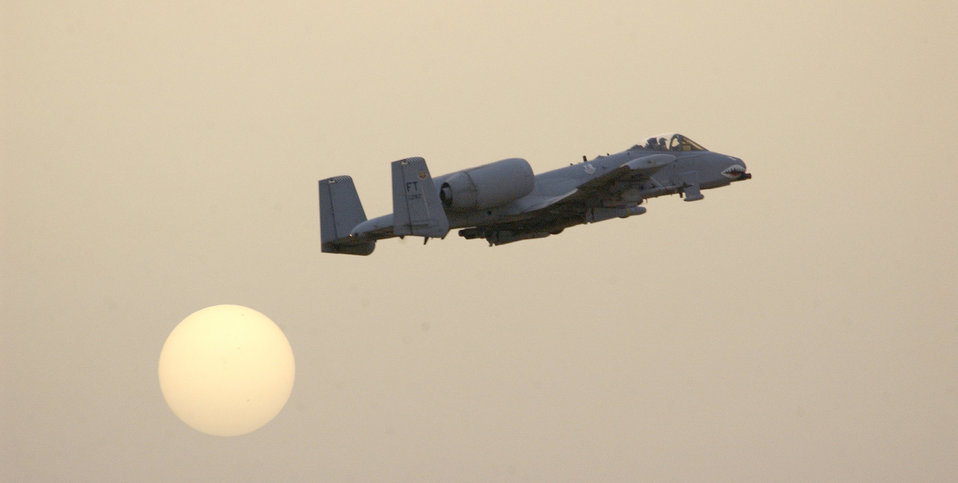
Thunder over the sun

OPERATION IRAQI FREEDOM -- An A-10 Thunderbolt II from the 332nd Air Expeditionary Wing takes off for a mission into Iraq, March 29, 2003, from a forward-deployed location in support of Operation Iraqi Freedom. Operation Iraqi Freedom is the multi-national coalition effort to liberate the Iraqi people, eliminate weapons of mass destruction and to end the regime of Saddam Hussien.